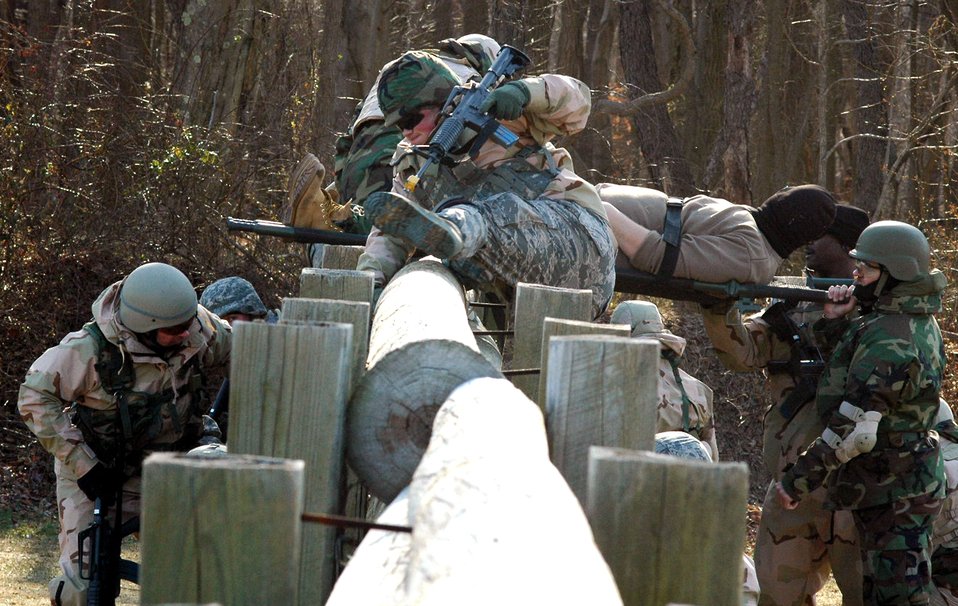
Airmen complete first Air Advisor Course

Students go through the combat first aid obstacle course Feb. 29 on a range on Fort Dix, N.J. Taught by Expeditionary Operations School officials, Air Force Expeditionary Center's Air Advisor Course 08-1 prepares Airmen deploying to Afghanistan and Iraq who will in turn be training military forces in those countries.